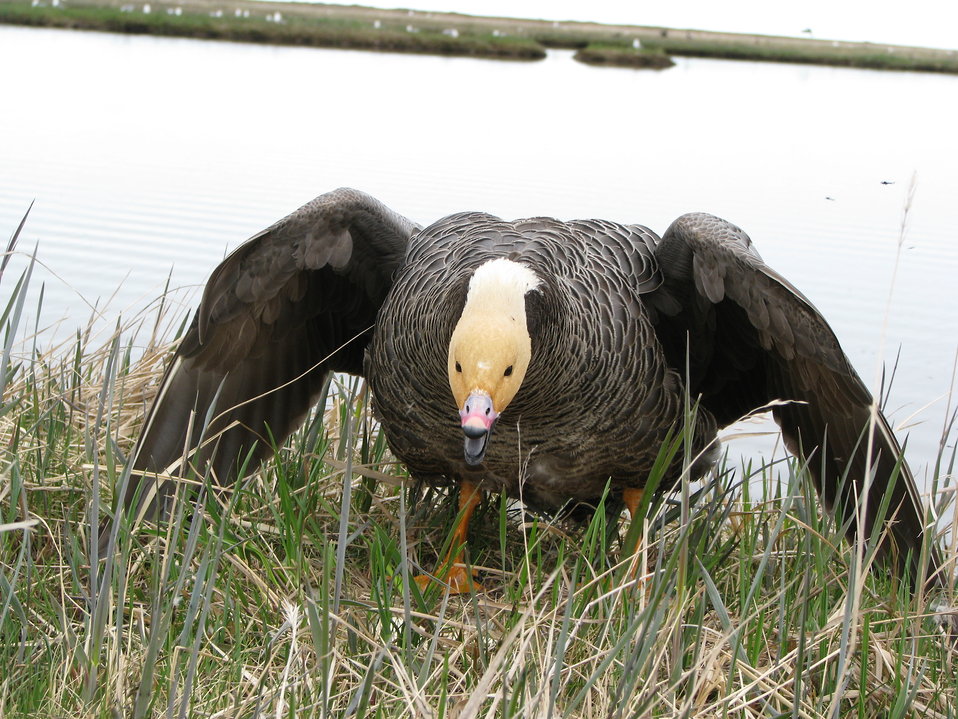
Female Emperor goose defending her nest

Yukon Delta NWR
This is a typically thing to witness right after hatch has occurred. Female emperors are very protective of their young.